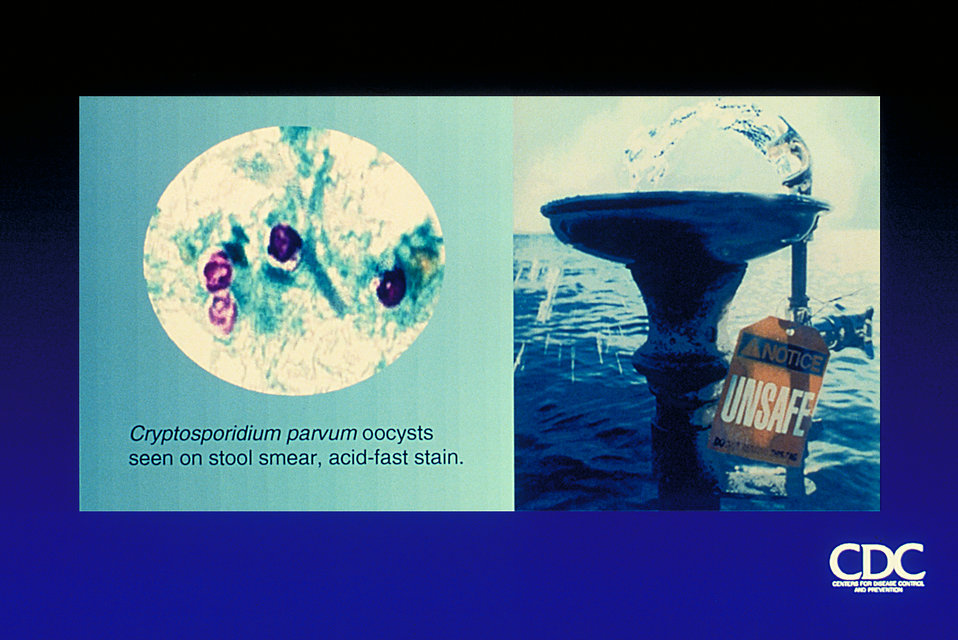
Cryptosporidium (photomicrograph and photo).